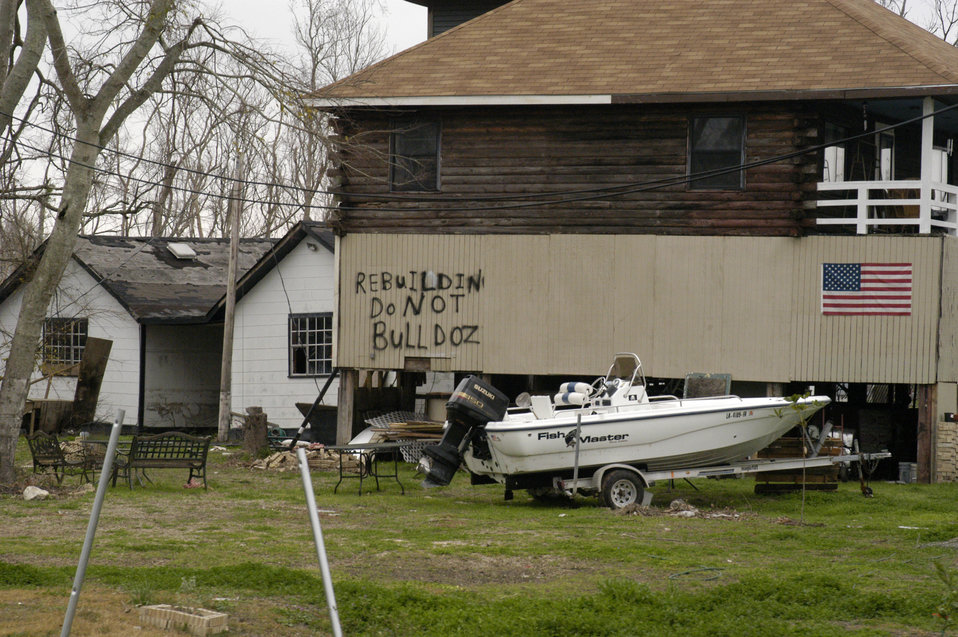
Thousands of homes were destroyed in Plaquemines Parish, LA, by Hurricane Katrina. Katrina made landfall on Monday morning, August 29, 2005 as a Category 3 hurricane with sustained winds of 125/mph with over a 20-foot storm surge. Katrina caused catastrophic damage over 90 thousand square miles across Louisiana with an estimated $75 billion dollars in damage. The total economic impact to the Gulf Coast was estimated at over $150 billion. 80% of New Orleans, LA, was underwater with some areas more than 20 feet deep. Less than a month later southern Louisiana was struck by a second Category 3 hurricane Rita inflicting more damage in the southwestern areas of Louisiana adding an addition $12 billion worth of damage to the already beleaguered state. The U. S. Army Corps of Engineers (USACE) under the auspices of Federal Emergency Management Agency (FEMA) was the lead service in providing assistance to the citizens of Louisiana. The U. S. Department of Agriculture (USDA) supplied emergency food aid, emergency loan assistance to farmers and home owners, and USDA personnel from around the nation volunteered their time and muscle to aid in the recovery operations.